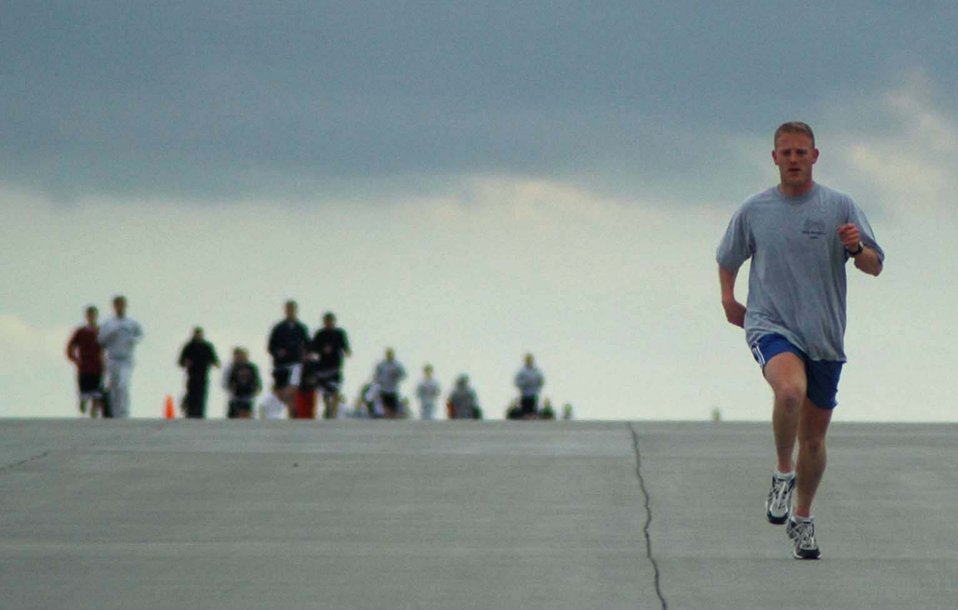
Run this way

MINOT AIR FORCE BASE, N.D. -- Capt. Andrew Murphy leads the charge during a 1.5 mile fun run on the runway here May 26. Captain Murphy was the first person to cross the finish line with a time of 9 minutes, 3 seconds. The runway is shut down until June 5 for maintenance. Captain Murphy is assigned to the 23rd Bomb Squadron.